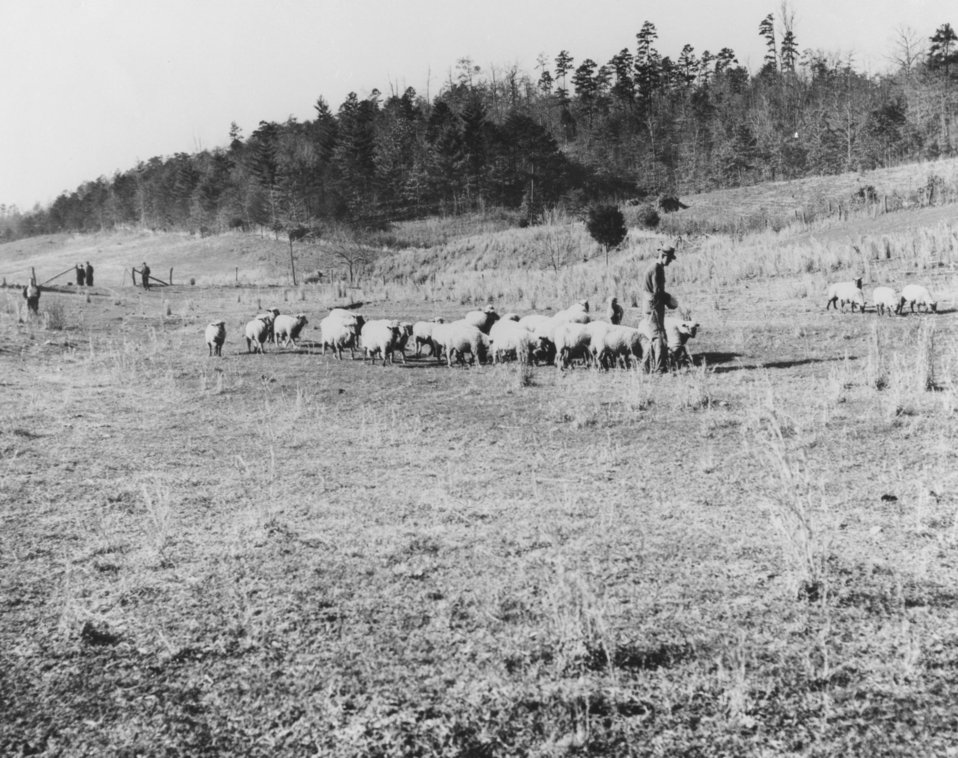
Early settlers at Oak Ridge